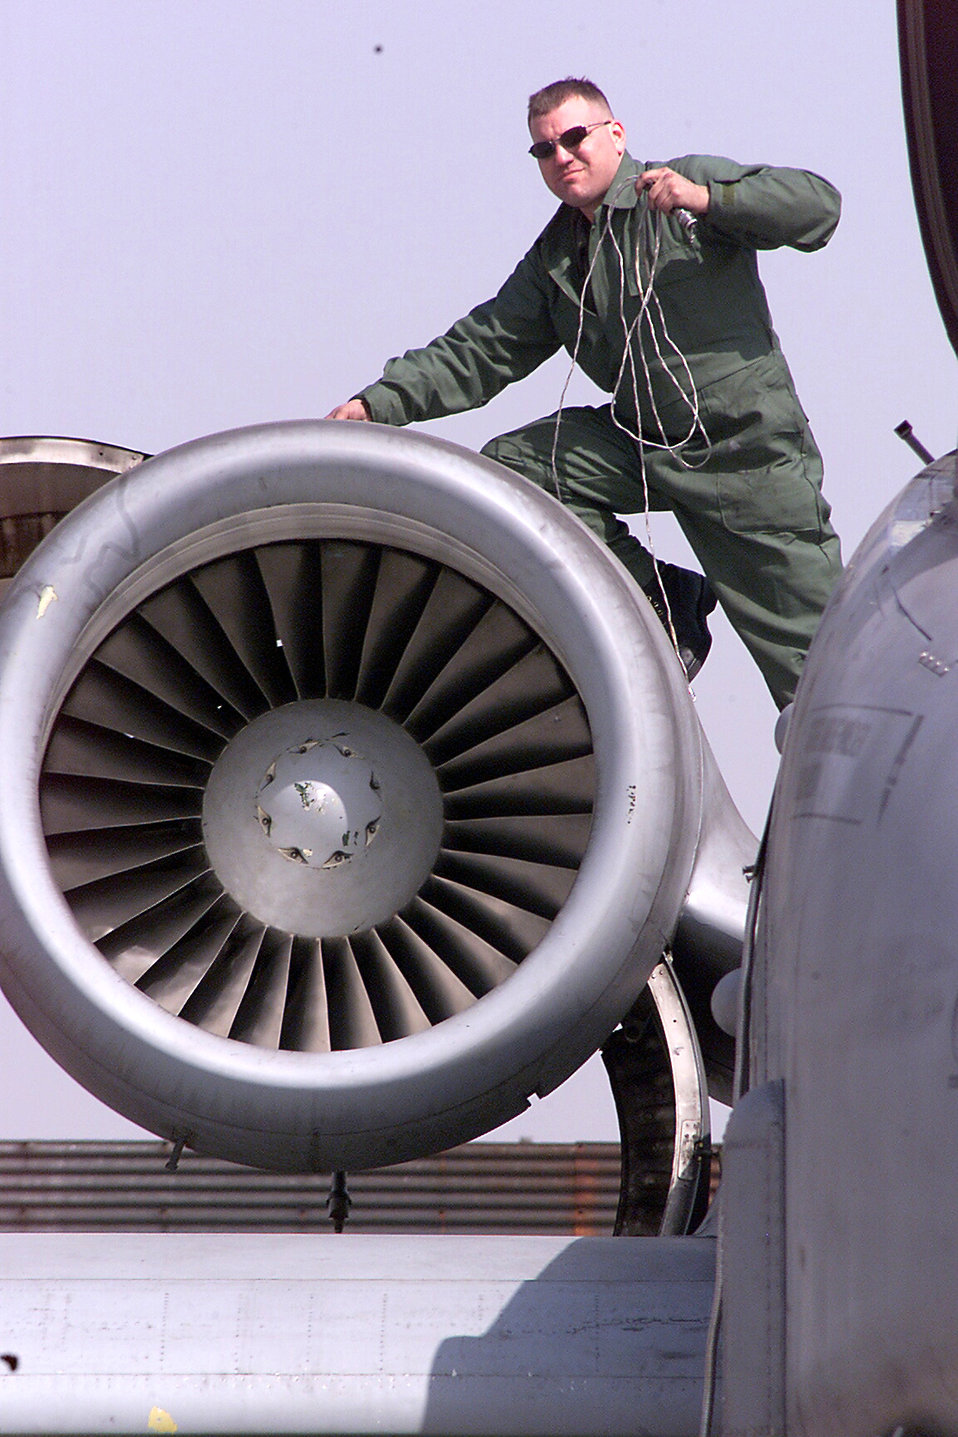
Vibration check

OSAN AIR BASE, South Korea -- Staff Sgt. Matthew Kolar hooks up a portable balancing system on an A-10 Thunderbolt II jet engine March 31 to monitor vibrations on the engine. Sergeant Kolar is an aerospace propulsion craftsman from the 25th Fighter Squadron.